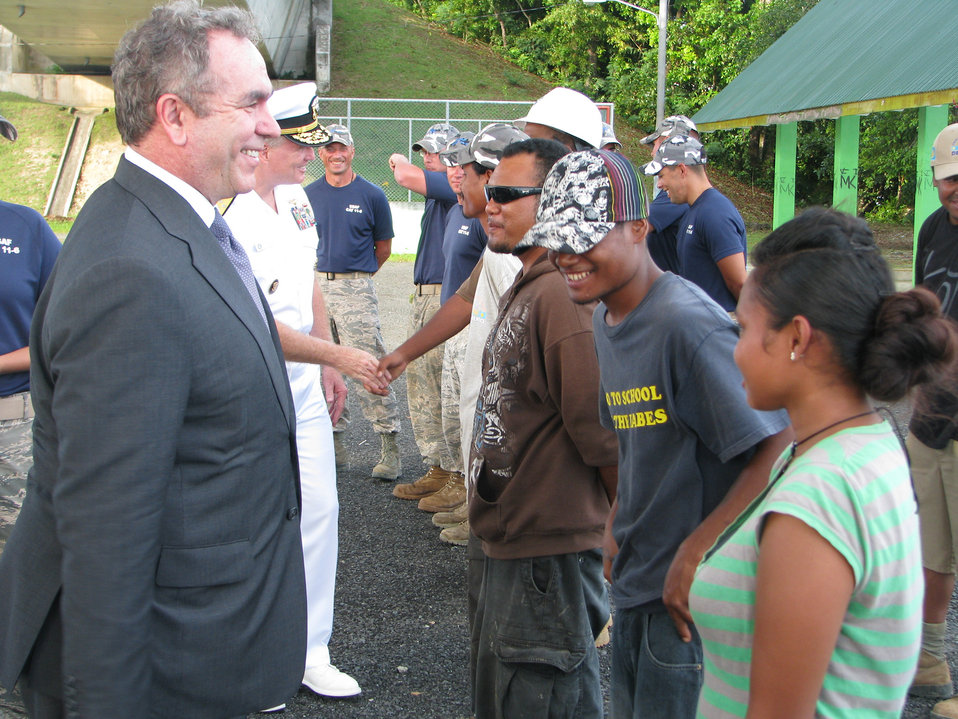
Assistant Secretary Campbell and Adm. Walsh Speak With Local Residents

Assistant Secretary of State for East Asian and Pacific Affairs Kurt Campbell, foreground, and Adm. Patrick Walsh, commander of U.S. Pacific Fleet, left center, speak with local residents assisting with a U.S. Air Force civic action team project at Airai Park in Koror, Palau, on June 30, 2011. Assistant Secretary Campbell is leading a U.S. delegation, which includes Adm. Walsh; Office of the Secretary of Defense South/Southeast Asia Principal Director, Marine Corps Brig. Gen. Richard Simcock, left; and U.S. Agency for International Development (USAID) Assistant Administrator Nisha Biswal, on a visit to nations throughout the South Pacific.